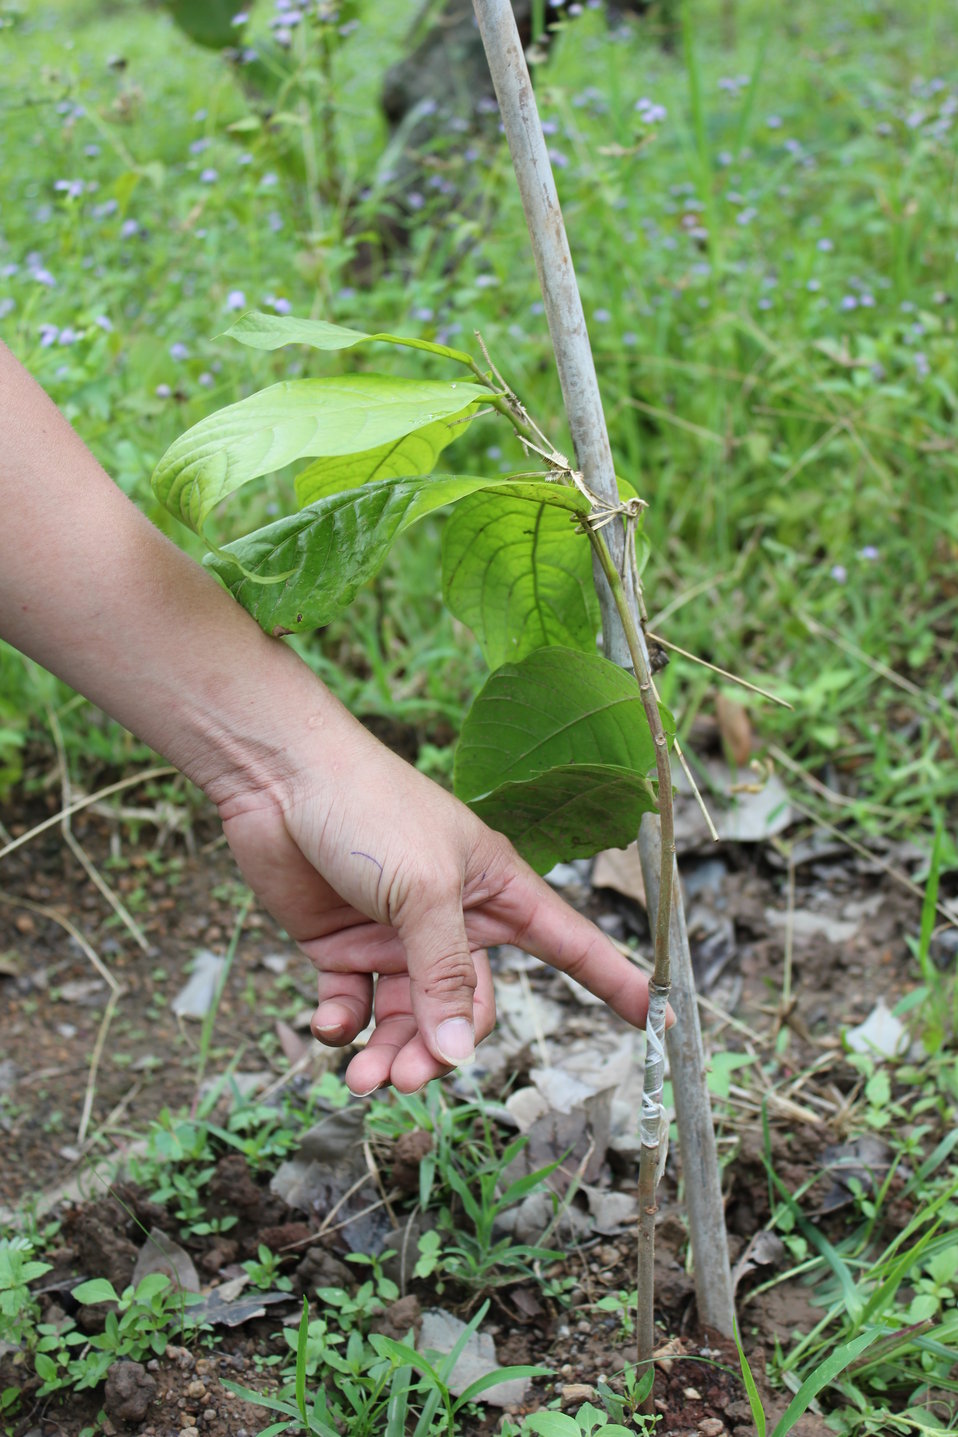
USAID supports cocoa cultivation in central Vietnam

Buon Don District, Dak Lak Province. August 6, 2013.